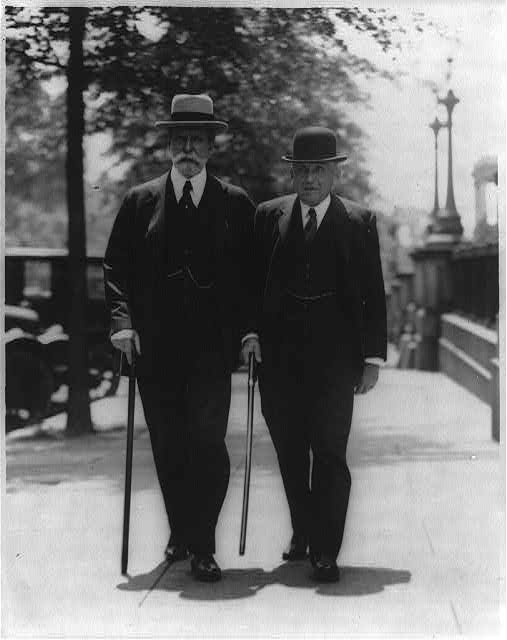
Secretaries Kellogg and Hughes

Secretary of State Frank B. Kellogg walking with former Secretary of State Charles Evans Hughes outside the State Department.